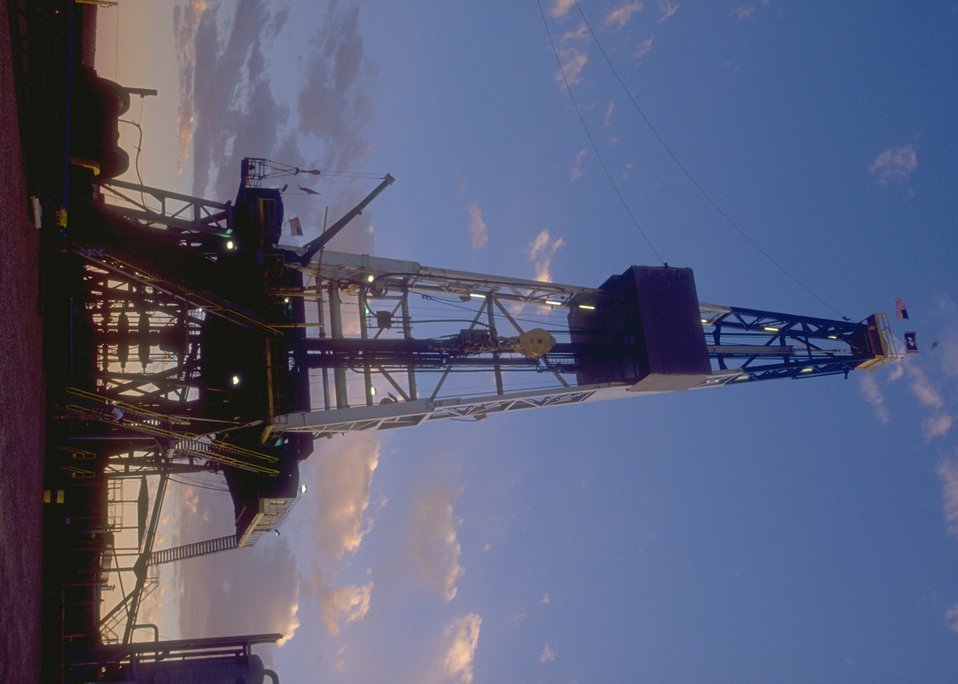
Burlington Northern deep well rig, Casper Field Office.